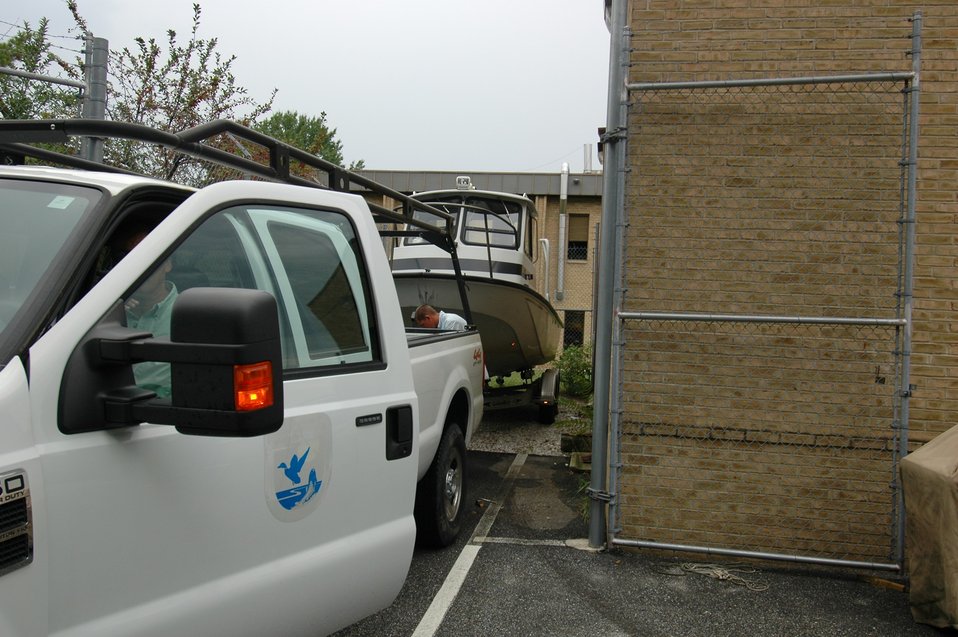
Hurricane preparedness at the Chesapeake Bay Field Office.

Moving a field station boat to higher ground at the Chesapeake Bay Field Office in Maryland.